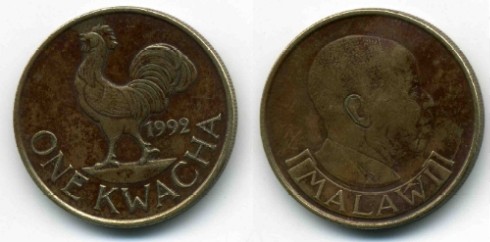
Deutsch: 1 Malawi-Kwacha